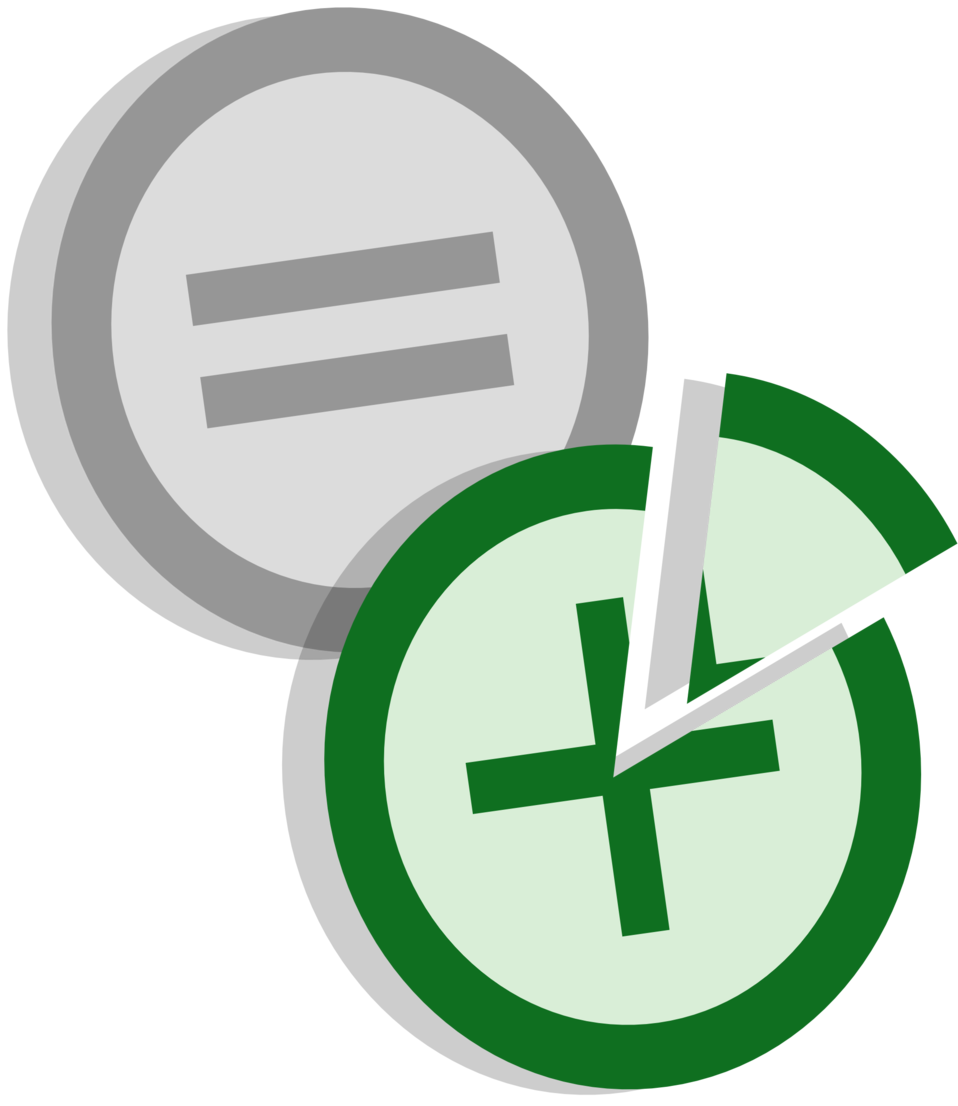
Just a combination of en:Image:GA candidate.svg and en:Image:Symbol neutral vote.svg As requested in the Images to Improve.